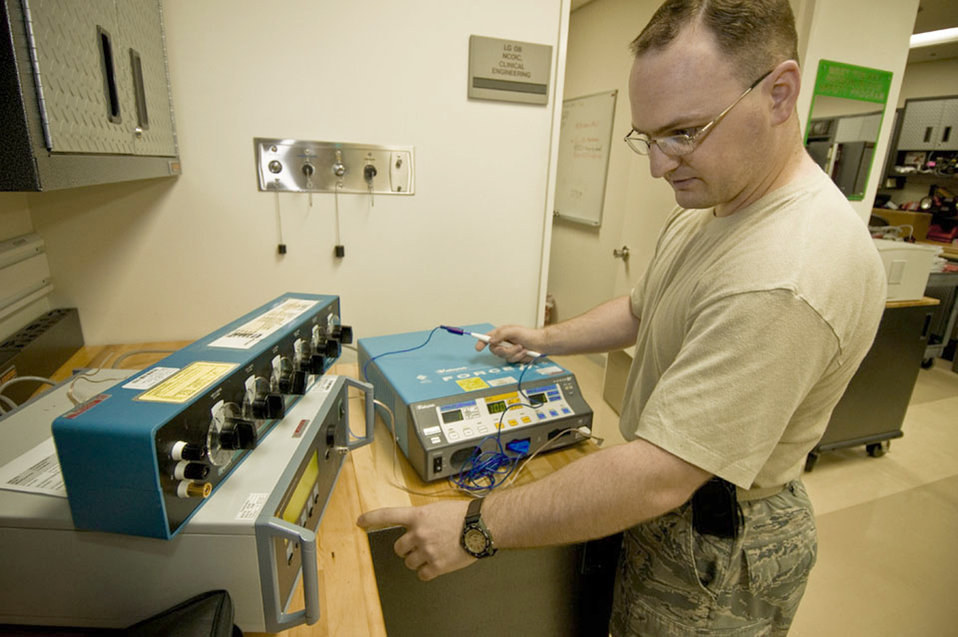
BMETs deliver

Staff Sgt. Ryan Flynn tests the output currency of an electric surgical scalpel Sept. 21, 2010, at the hospital at Misawa Air Base, Japan. Sergeant Flynn is a 35th Medical Support Squadron biomedical equipment technician.